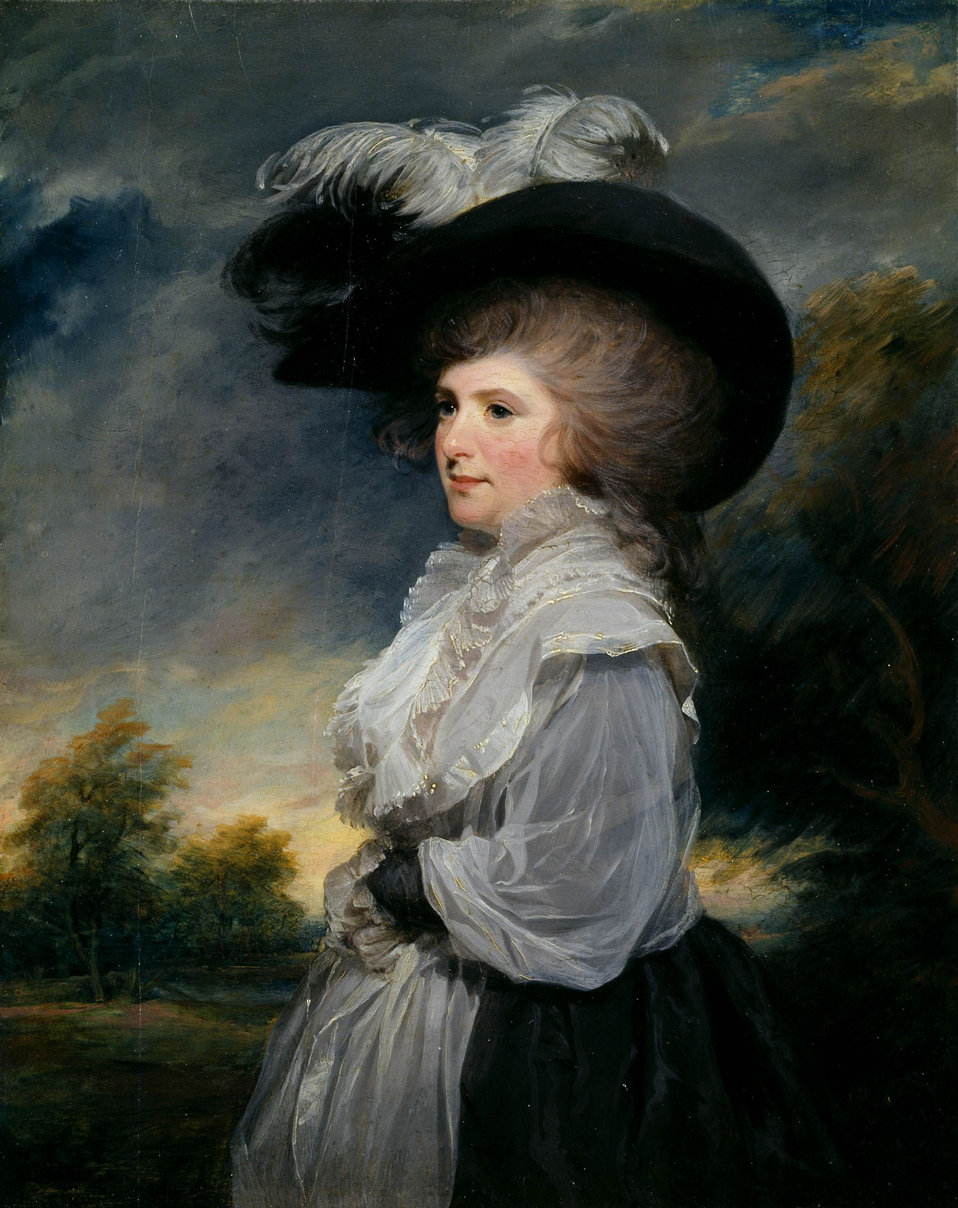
Mary Constance by Sir William Beechey, RA